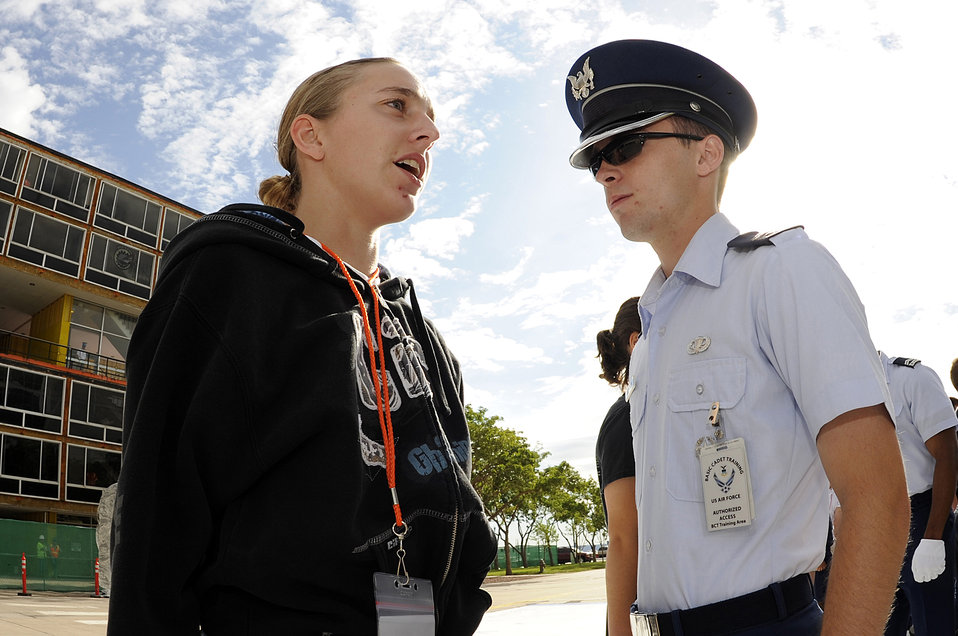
Welcome to the Air Force Academy!

A basic cadet learns basic responses during cadet inprocessing June 25 at the U.S. Air Force Academy in Colorado Springs, Colo. Females comprise 20 percent of the Class of 2013.